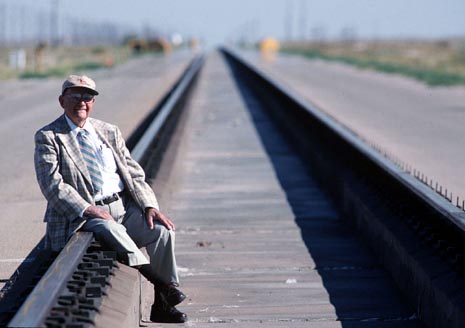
Colonel (Dr.) John Paul Stapp

1950's -- Retired Col. John Paul Stapp sits on the track, where in 1954 he rode a rocket sled at 632 mph, providing important research data for aviation and automobile safety.